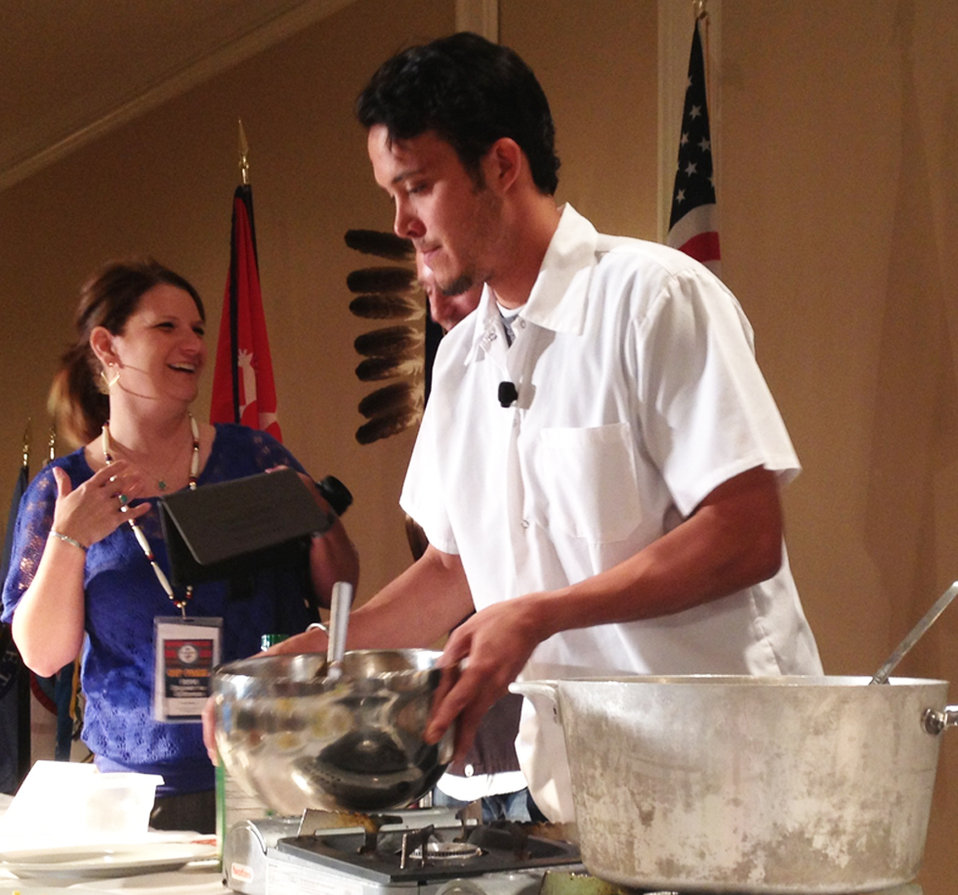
Tocabe-testing-2web

Tocabe puts on a live cooking demo for attendees of the National Food Distribution Programs on Indian Reservations (FDPIR) Conference. The demo showed how U.S. Department of Agriculture (USDA) foods could be used to combat health issues like obesity and diabetes.